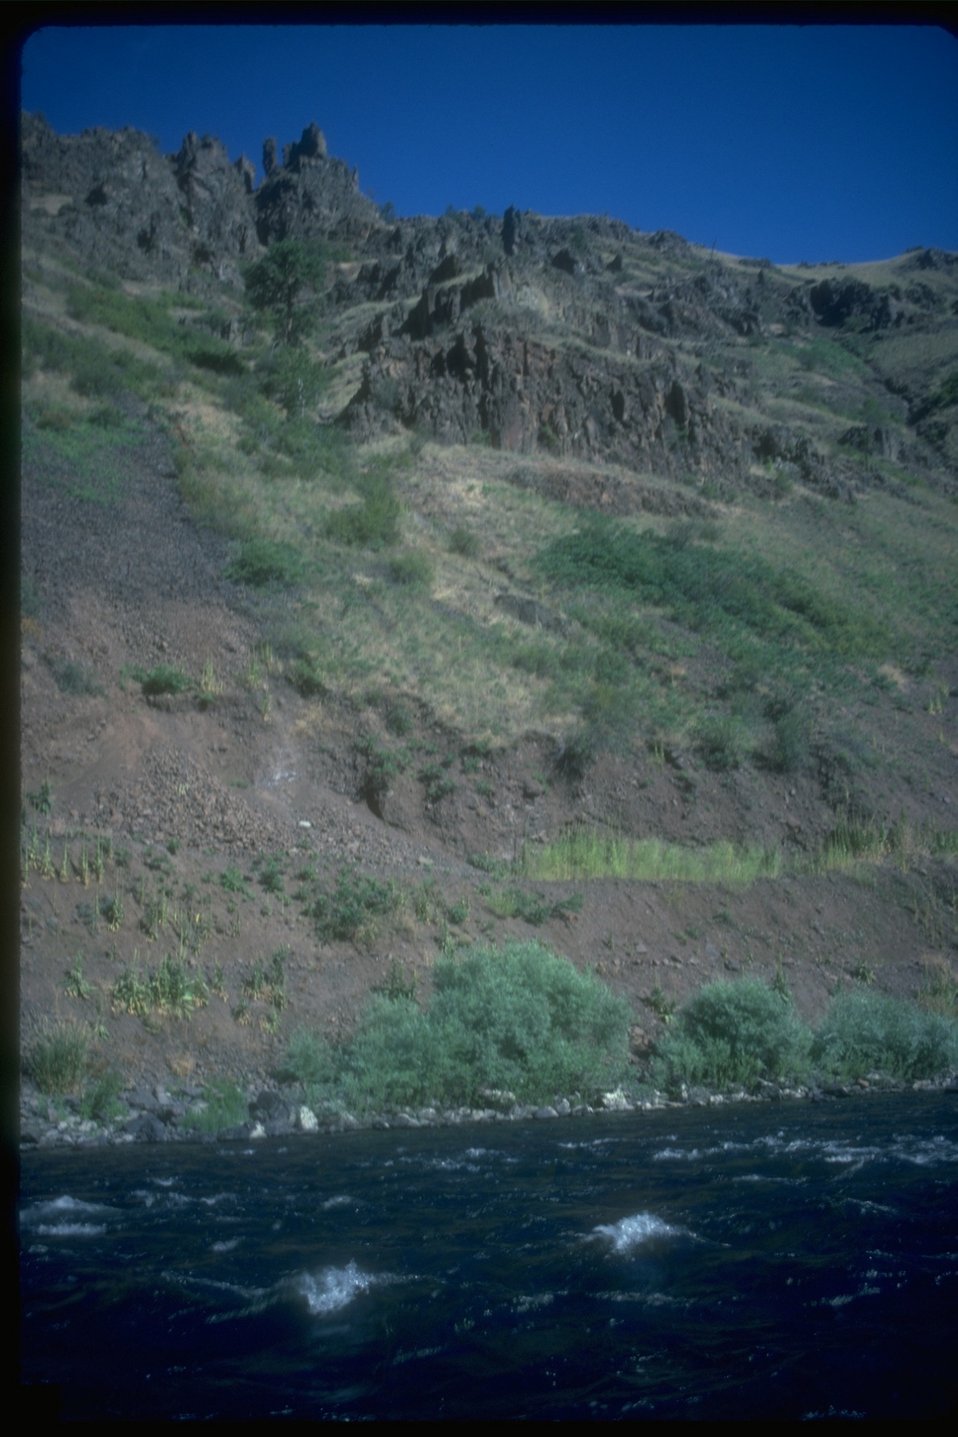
Looking up from the Grand Ronde River to the rock formations along the mountain.